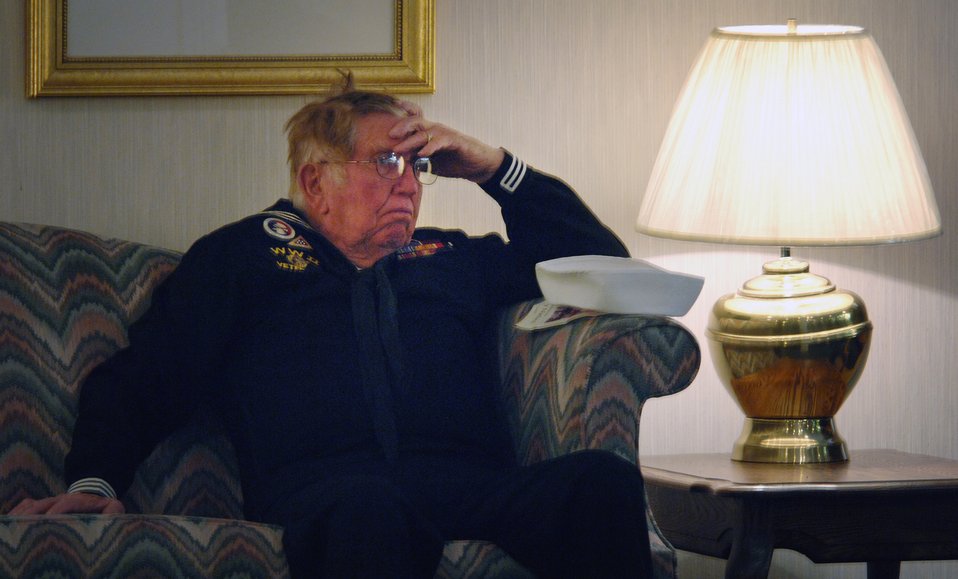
Lt. Col. Chase Nielsen service held March 28

Willie Hunsaker, retired Navy SEABEE and member of the Veterans of Foreign War Post 1695 from Brigham City, Utah, mourns the loss of Lt. Colonel Chase J. Nielsen at his memorial service in Hyrum, Utah March 28. Colonel Nielsen, a long time member of VFW Post 1695 post, was more than a hero to the post's members. Colonel Nielsen was one of the few remaining members of the famed Doolittle Raiders. The members of the Doolittle Raiders reached national acclaim in 1942 after launching the first successful aerial bombing raid on Tokyo, Japan as retaliation for the Japanese bombing of Pearl Harbor, Hawaii in December of 1941.